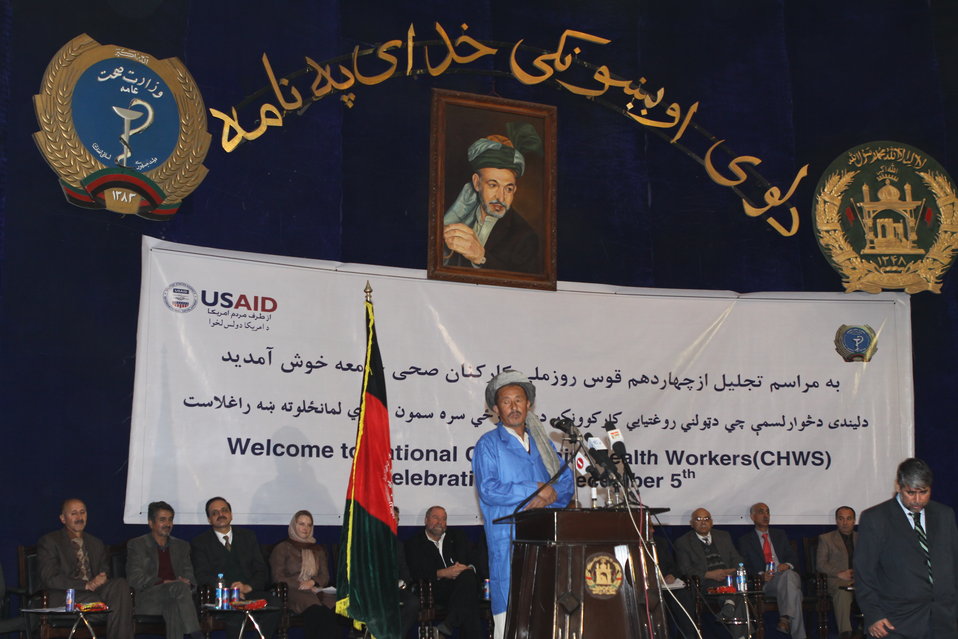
Community Health Workers Celebrated

Kabul, Afghanistan | December 5, 2010 — In support of the United Nations designated International Volunteer Day for Economic and Social Development, Afghanistan’s Ministry of Public Health celebrated its annual Community Health Worker Day today. Acting Minister of Public Health Dr. Suraya Dalil, USAID Senior Deputy Mission Director Robert Hellyer, other government officials, and international donors joined in recognizing the critical contribution of community health workers in Afghanistan and encouraging them to continue their voluntary support to their communities.
The event praised the contributions of the more than 22,000 volunteers throughout the country who deliver community level health-education, counseling, and services out of village health posts located in private homes. The Ministry of Public Health envisioned that community-based healthcare programs will actively encourage communities and families to adopt healthy lifestyles and behaviors, and provide families access to high quality and socially acceptable preventative medicine and life-saving services.
“We have 22,000 community health workers in Afghanistan that are able to implement the basic and standard medicines. They all have been trained through a job description,” said Minister Dalil. Addressing the health workers, she added, “I am proud and feel powerful that I have people like you.”
USAID-funded health projects collaborate closely with the Ministry of Public Health to improve the health and nutritional status of Afghans, provide quality primary healthcare, and promote healthy behaviors at the community and household-levels. USAID supported the training of more than 9,000 of the volunteer community health workers currently working in Afghanistan.
“On behalf of the American people, I congratulate the Community Health Workers for their diligence to gain the skills and knowledge necessary to serve their communities in this important role,” said USAID Senior Deputy Mission Director Hellyer. “USAID strongly supports community based health care and believes that quality community-based health services are essential to reaching Afghanistan’s Millennium Development Goals.”
To support the Basic Package of Health Services, USAID assisted in developing the community health worker training manual, helped train community health worker supervisors and master-trainers, facilitated in-service training, and produced and developed reporting tools, job aids, and education materials.